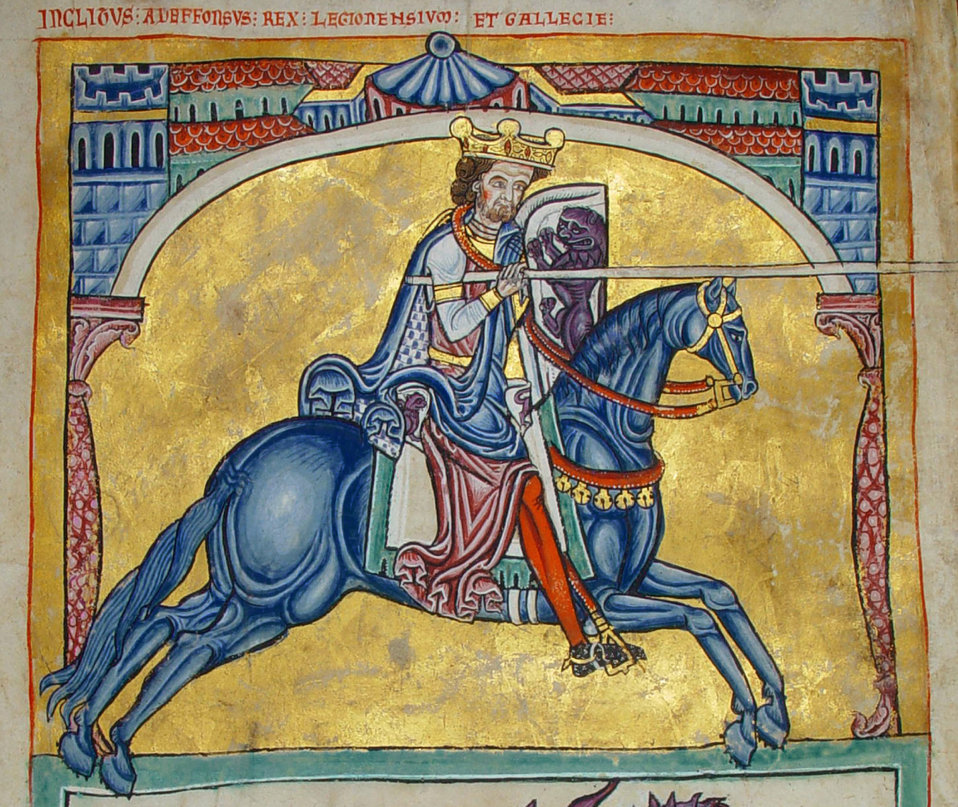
Miniature of the king Afonso VIII of Galicia and Leon